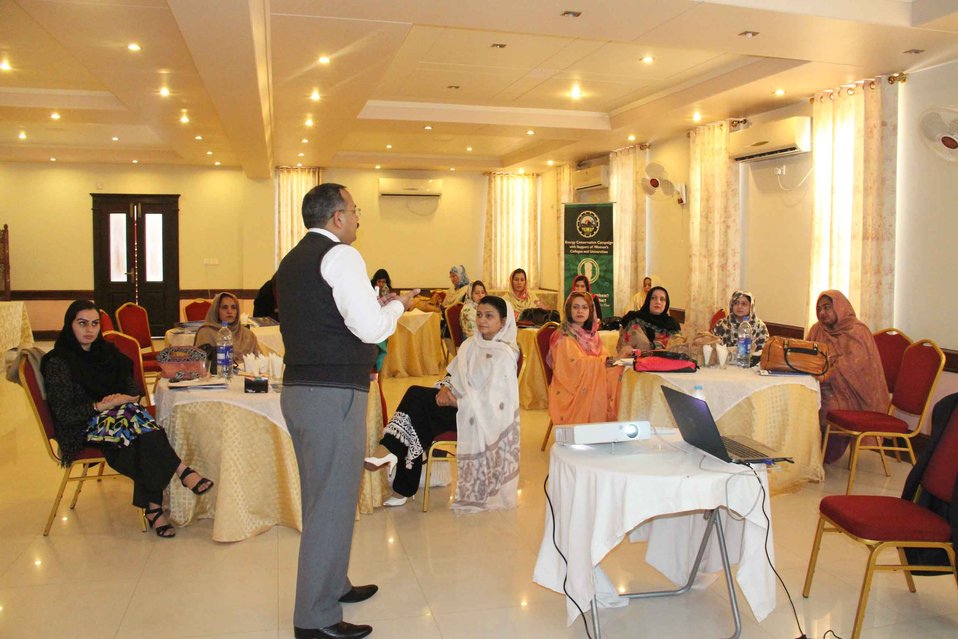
Women in Leadership Workshop for Peshawar Electric Supply Company

EMPOWERMENT
“Human beings tend to forget but what we have learnt today in this training has definitely fine-tuned us. This was a brilliant team effort on part of the Power Distribution Program and we definitely need more of such trainings in future as well.”
Peshawar Electric Supply Company, Dy. Chief Audit
Ghazala Habib

(Picture Above) Women in Leadership Workshop for Peshawar Electric Supply Company: The USAID Power Distribution Program successfully conducted the Professional Development Workshops for the female employees of Peshawar Electric Supply Company (PESCO). The workshops were conducted in Peshawar for different groups of participants, including PESCO’s female employees, PDP’s female interns positioned at PESCO, as well as principals from girls’ colleges in Peshawar. These workshops develop leadership skills in PESCO’s female workforce while inculcating integrity and professionalism. Challenges faced by professional women were discussed; Mehgarh Director Maliha Hussain joined PDP’s HR and Capacity Building Expert Rehan Hameed in giving participants meaningful insights on how to overcome the challenges faced at the workplace.